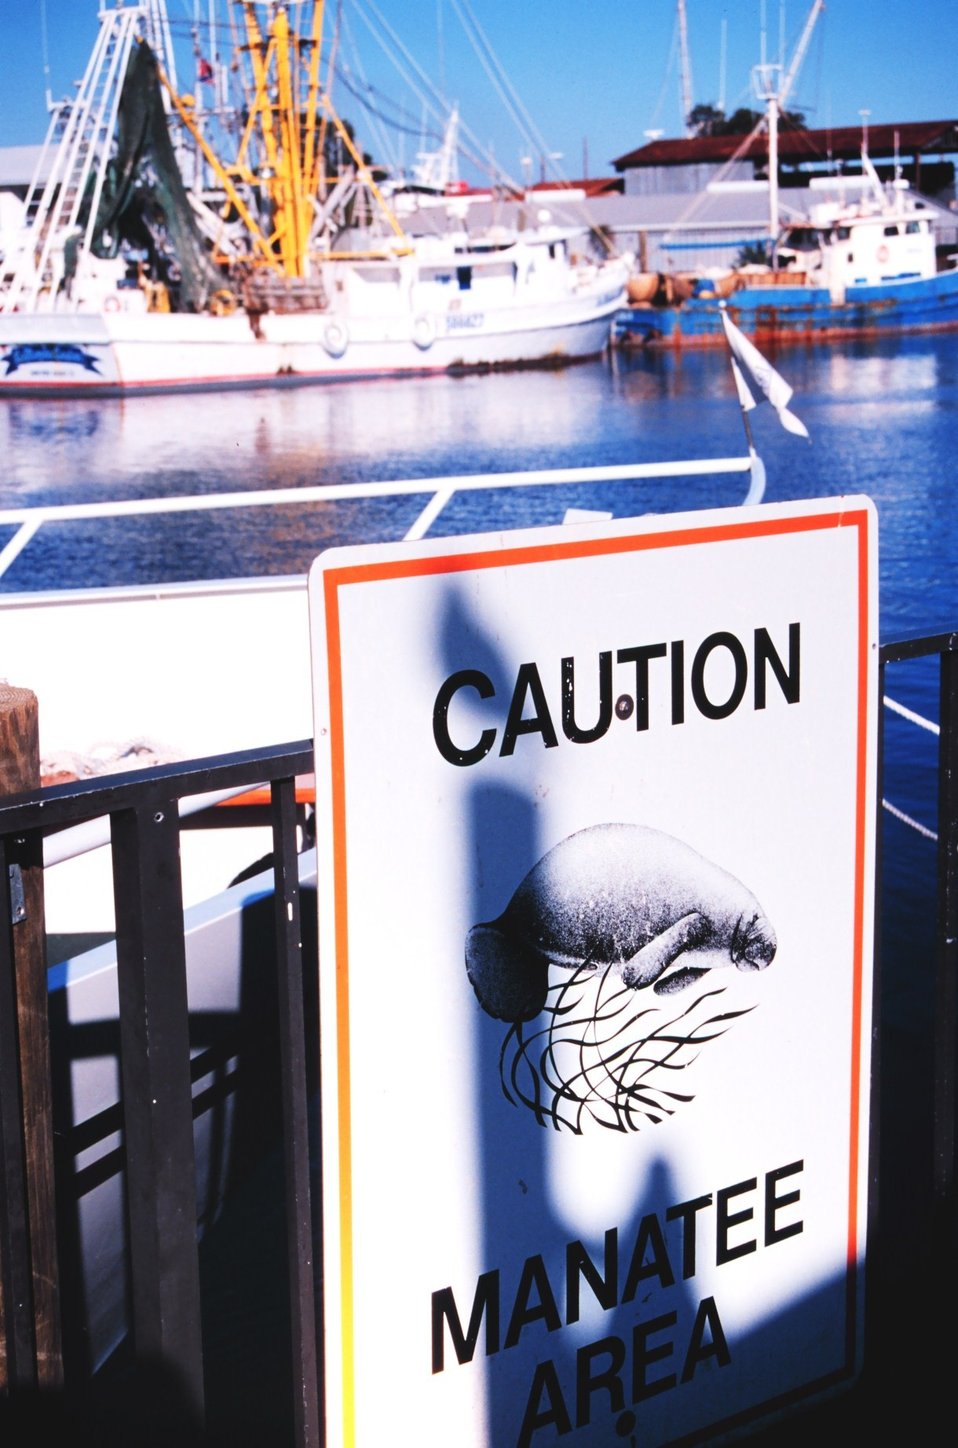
Look out for the manatee!